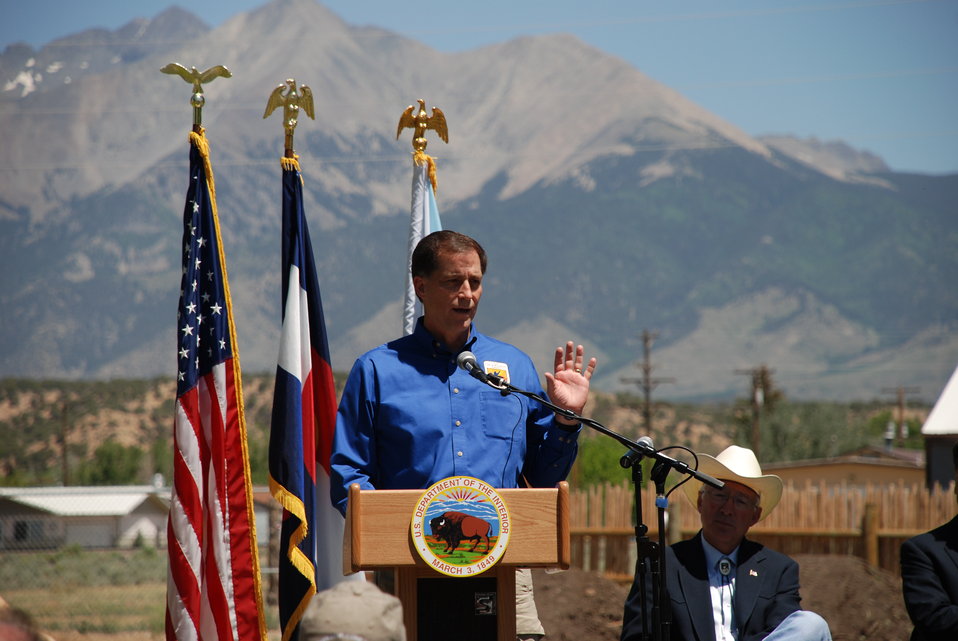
Historic Conservation Easement in Sangre de Cristo Mountains

USFWS Director Dan Ashe speaks about the importance of public/private partnerships in preserving wildlife habitat.